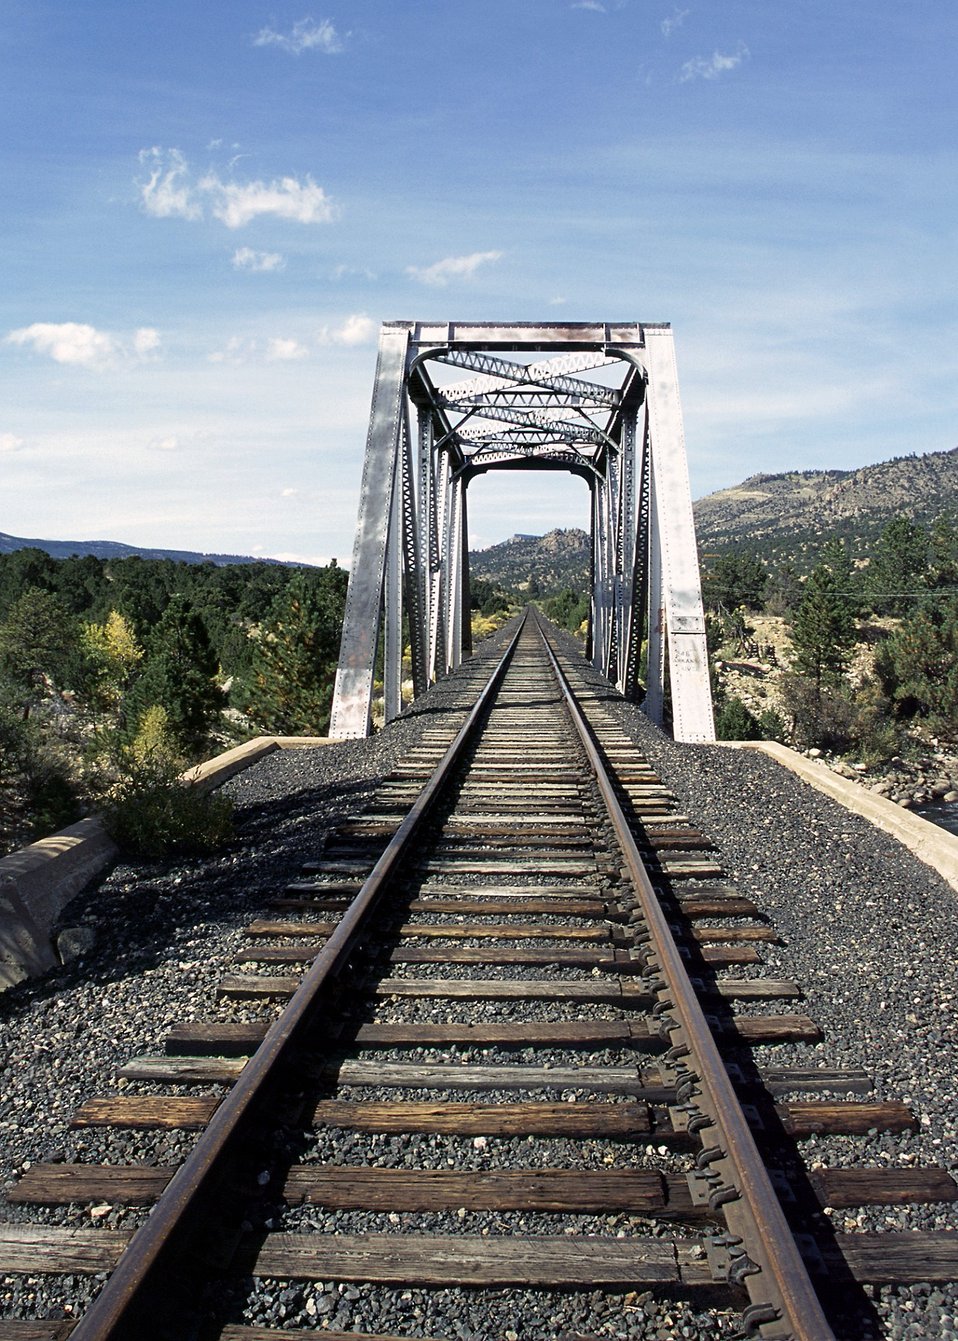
Rail Road Bridge